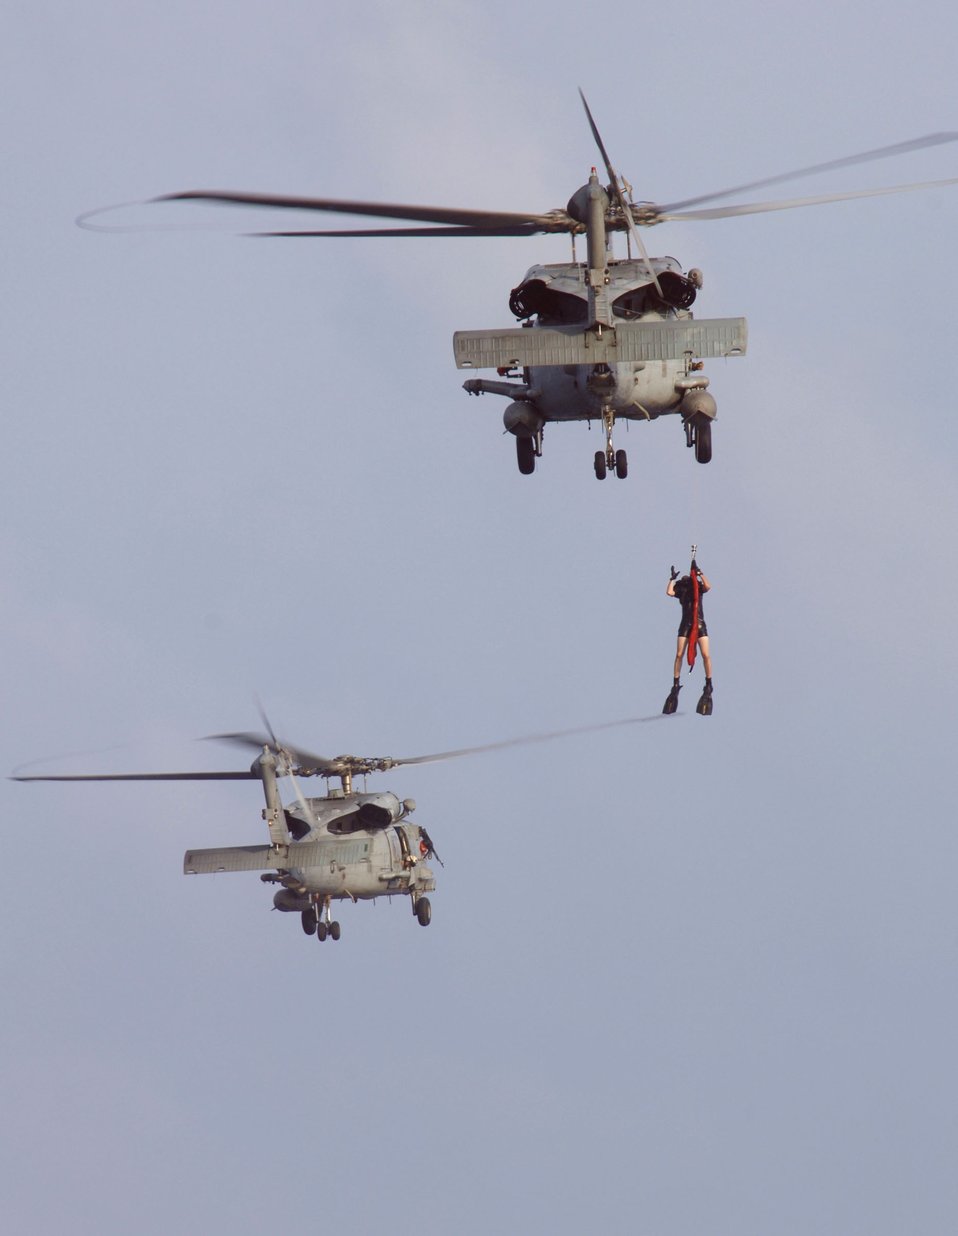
Rescue me

KADENA AIR BASE, Japan -- A Navy pararescueman is hoisted by a Navy HH-60G Pave Hawk helicopter from the aircraft carrier USS Kitty Hawk during water mass casualty training. U.S. Air Force and Navy HH-60G helicopters